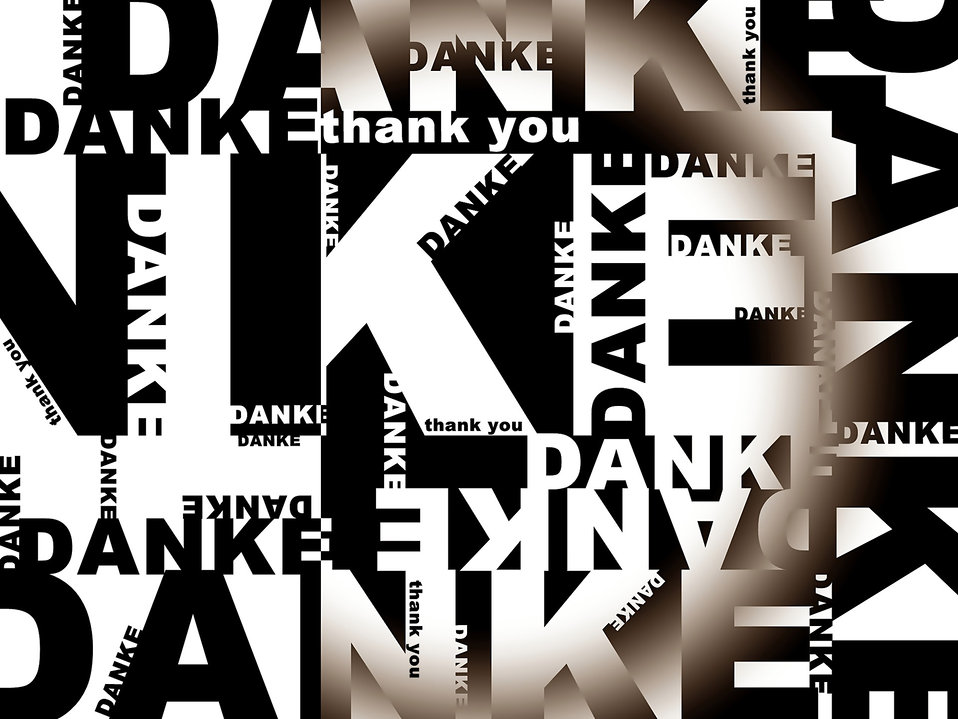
Thank you background.